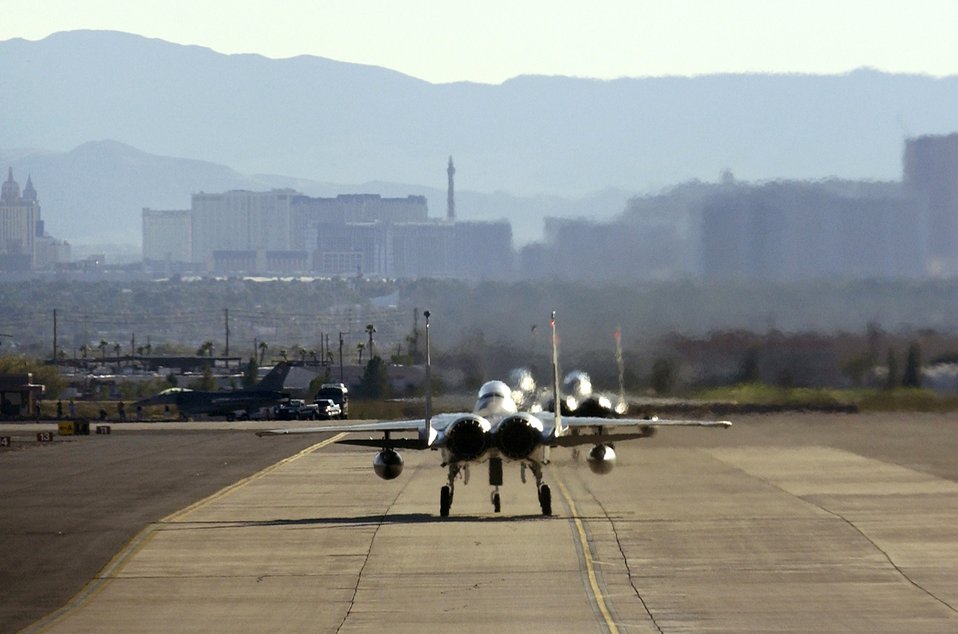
Airmen hone skills at Red Flag

F-15 Eagles taxi out Oct. 19 during Red Flag 07-1 at Nellis Air Force Base, Nev. Red Flag tests aircrews' warfighting skills in realistic combat situations.